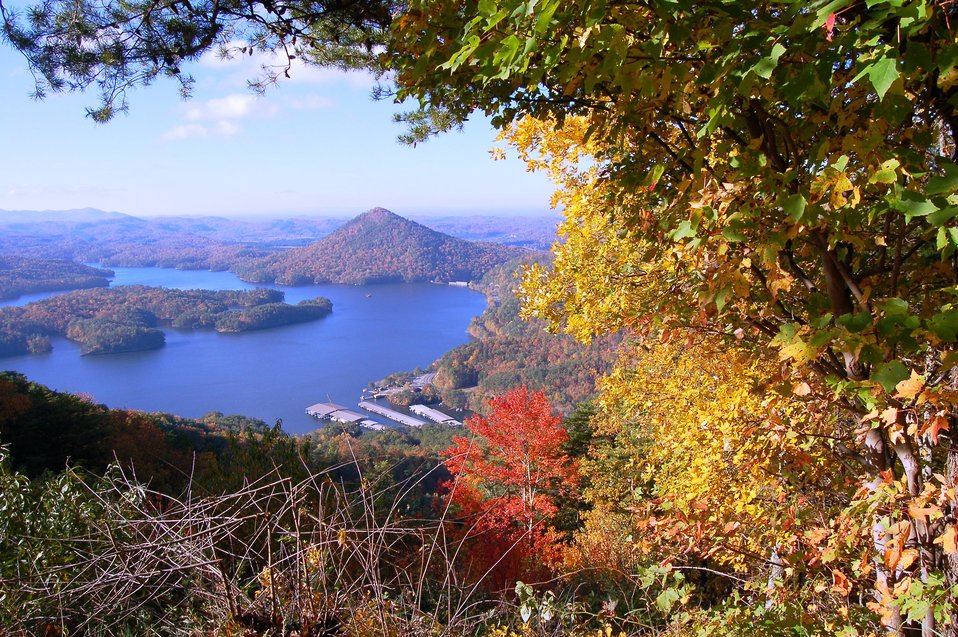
The Ocoee Scenic Byway, the first national forest byway in the nation, winds through the Cherokee National Forest near Cleveland, TN. The U.S. Forest Service (FS) has a Forest Service 2012 Fall Colors Website and a toll-free Fall Colors Hotline at 1-800-354-4595 that will help visitors plan their trip to catch the colors at their peaks.USDA photo by J. Knowles.